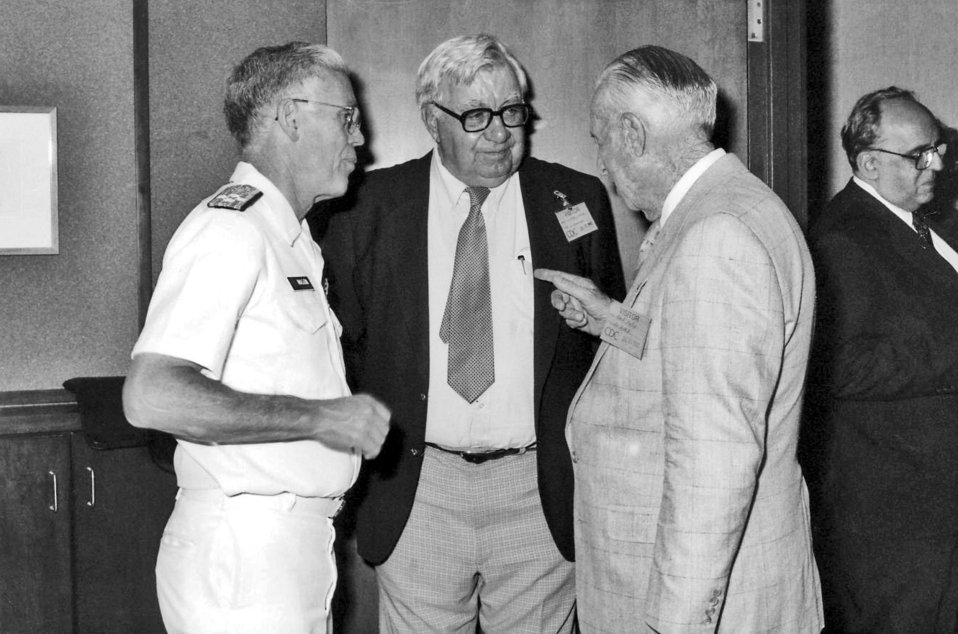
This 1992 photograph, taken during the Centers for Disease Control's 46th anniversary ceremony, showed (left to right) former organization Directors, Dr. James O. Mason (1983 - 1989), Dr. Robert J. Anderson (1956 - 1960), Dr. Mark D. Hollis (1944 - 1946), and Dr. David J. Sencer (1966 - 1977).